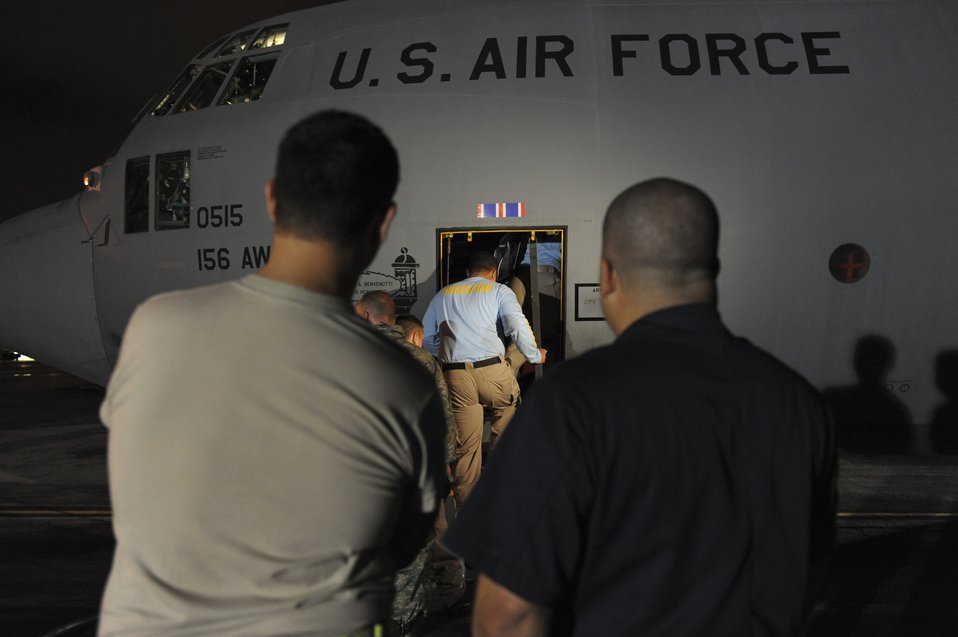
haiti night mission

Airmen from the Puerto Rico Air National Guard’s 156th Airlift Wing escort Puerto Rican aid relief workers aboard a C-130E Hercules aircraft Jan. 16, 2010, to support the relief effort in Haiti in the aftermath of a devastating earthquake.